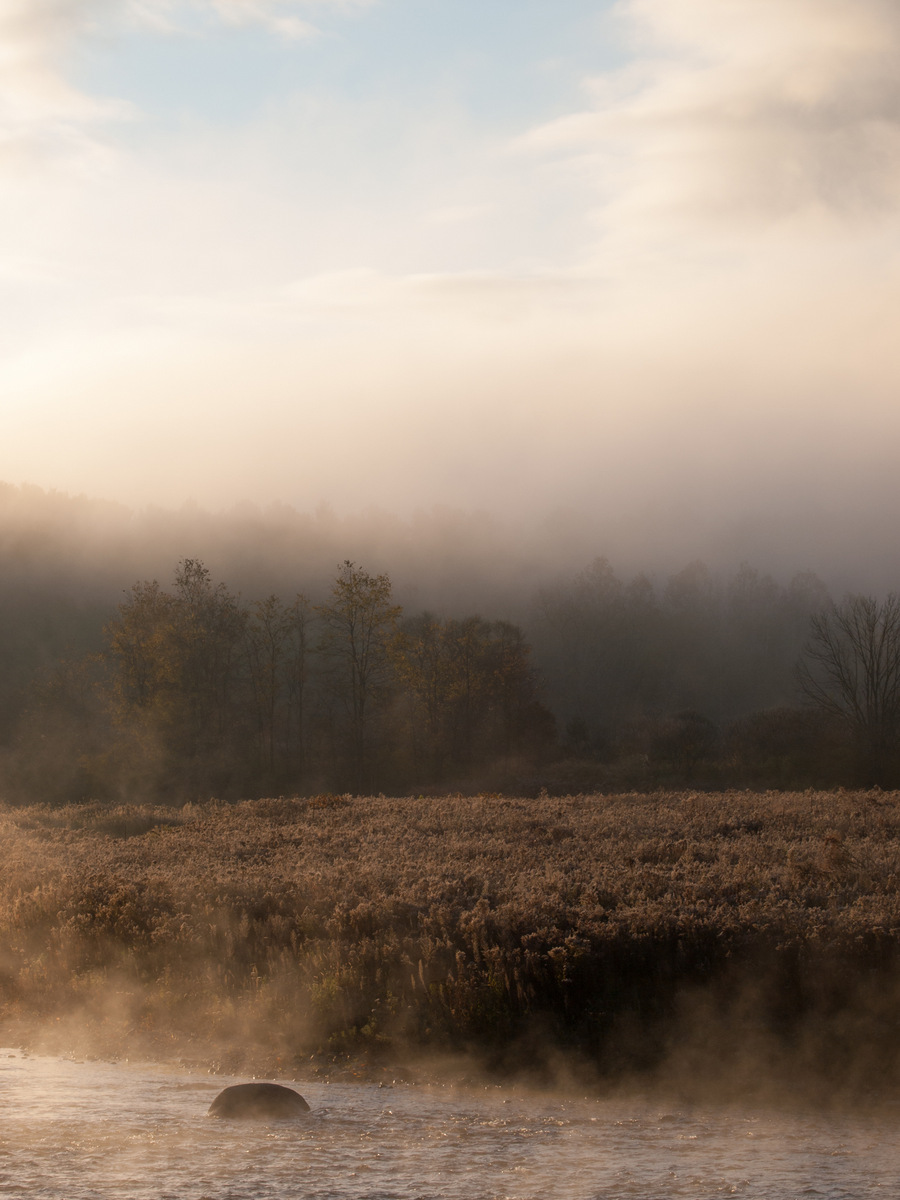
Early morning fog on the Deerfield River

Photographed in Charlemont, MA.